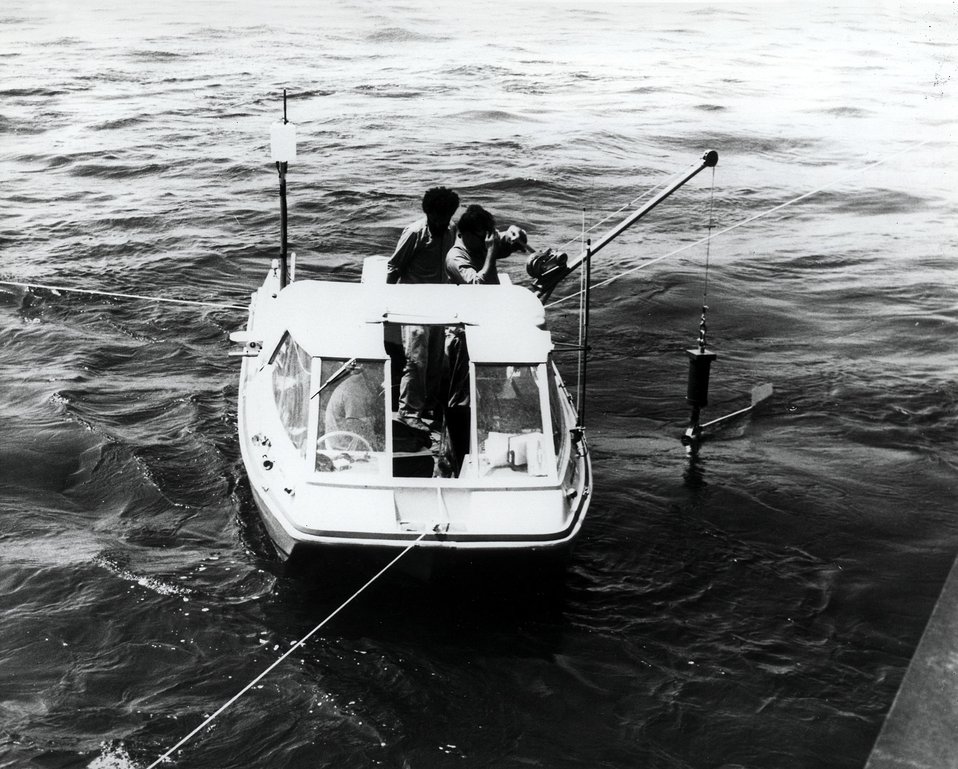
Researchers from the AEC's Argonne lower a device which will measure current direction and speed into a thermal plume of a power plant on Lake Michigan.